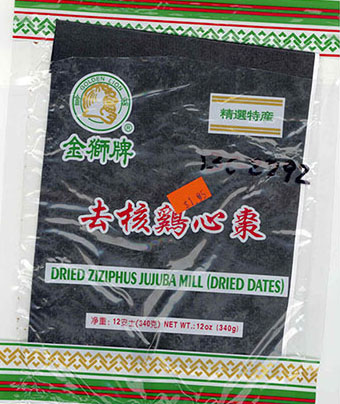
RECALLED – Dried dates

December 11, 2013 – Product Recall – Blooming Import Inc. Issues an Alert on Undeclared Sulfites in Golden Lion Brand Dried Ziziphus Jujuba Mill (Dried Dates).